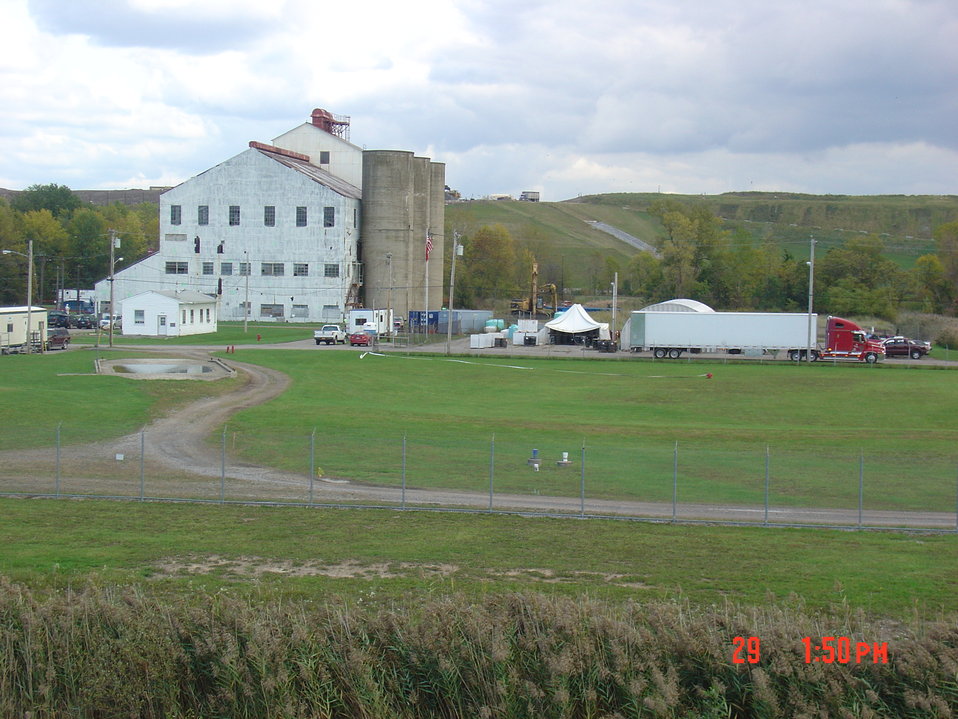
NFSS Building 401 pre-demolition.

Activities from the Niagara Falls Storage Site, which is associated with the former Lake Ontario Ordnance Works. Formerly Utilized Sites Remedial Action Program (FUSRAP), a program initiated in 1974 to identify, investigate and clean up or control sites that were part of the Nation's early atomic energy and weapons program. Activities at the sites that are eligible for FUSRAP were conducted by Manhattan Engineer District (MED) or the Atomic Energy Commission (AEC), both predecessors of the Department of Energy (DOE). The U.S. Army Corps of Engineers was assigned management of FUSRAP by Congress in 1997.